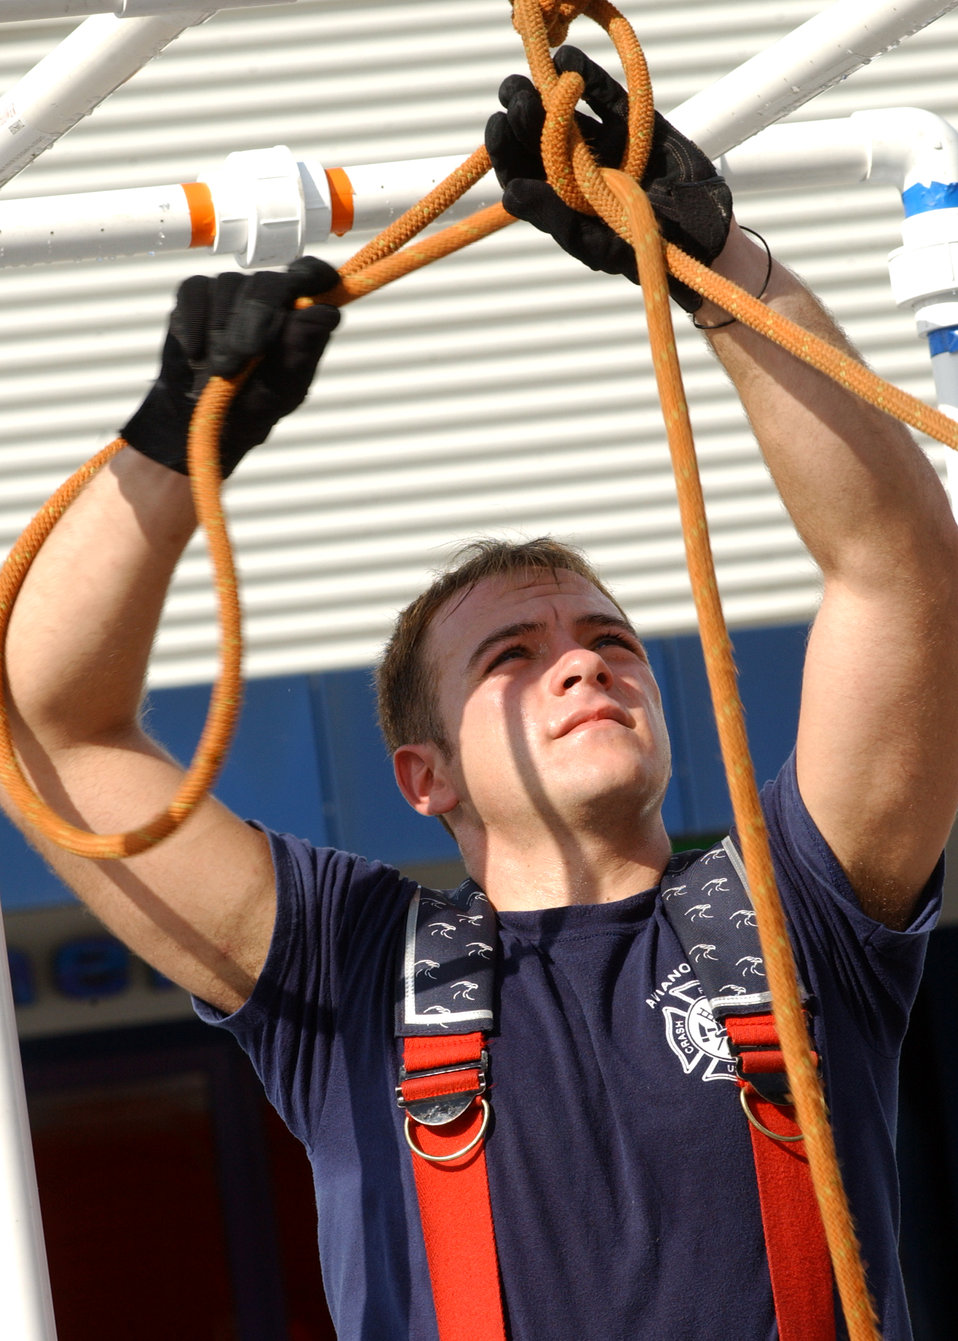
Finishing touches

PIANO, Italy -- Airman 1st Class Brian Wilson ties on the finishing touch to a decontamination shower during an exercise here Sept. 13. Emergency response organizations from around the Fruili-Venezia-Giulia region gathered in a local shopping district for a mass-casualty exercise simulating a terrorist attack. Italian volunteers, as well as American volunteers from Aviano Air Base, acted as victims. Airmen from Aviano's fire department and the 31st Medical Group were on scene to provide decontamination and medical support. Airman Wilson is a firefighter with the 31st Civil Engineer Squadron.